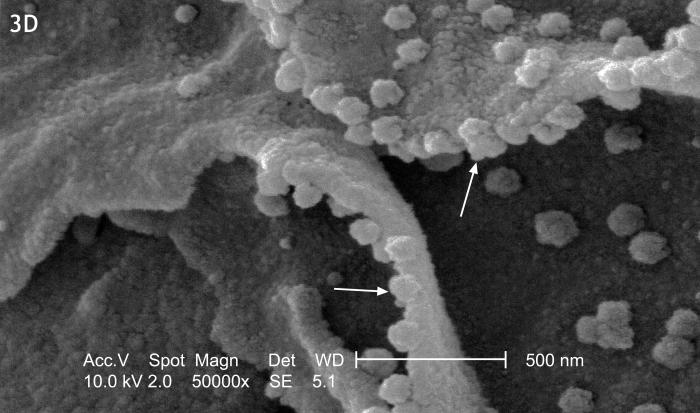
The arrows in this scanning electron micrograph point to the exportation of virus particles from the cell surface pseudopodia.